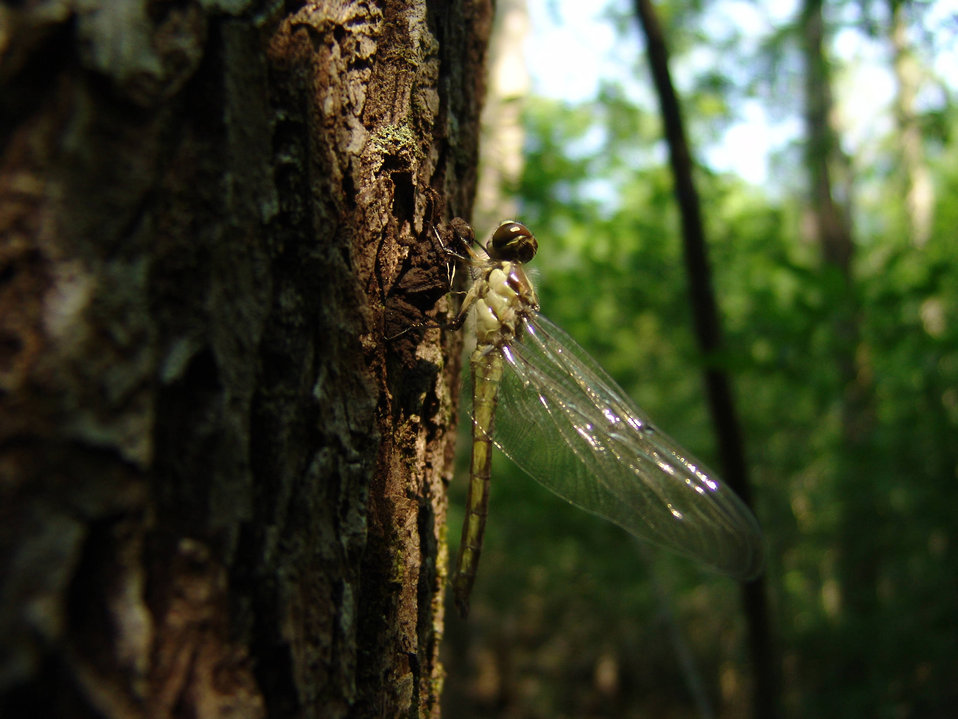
Dragonfly emerging